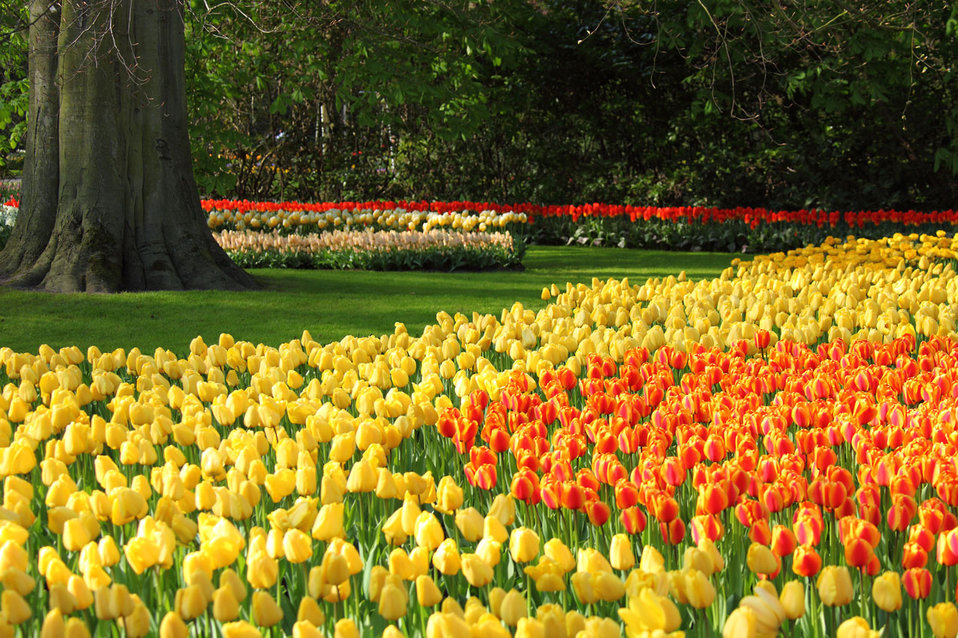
Tulips in keukenhof gardens.